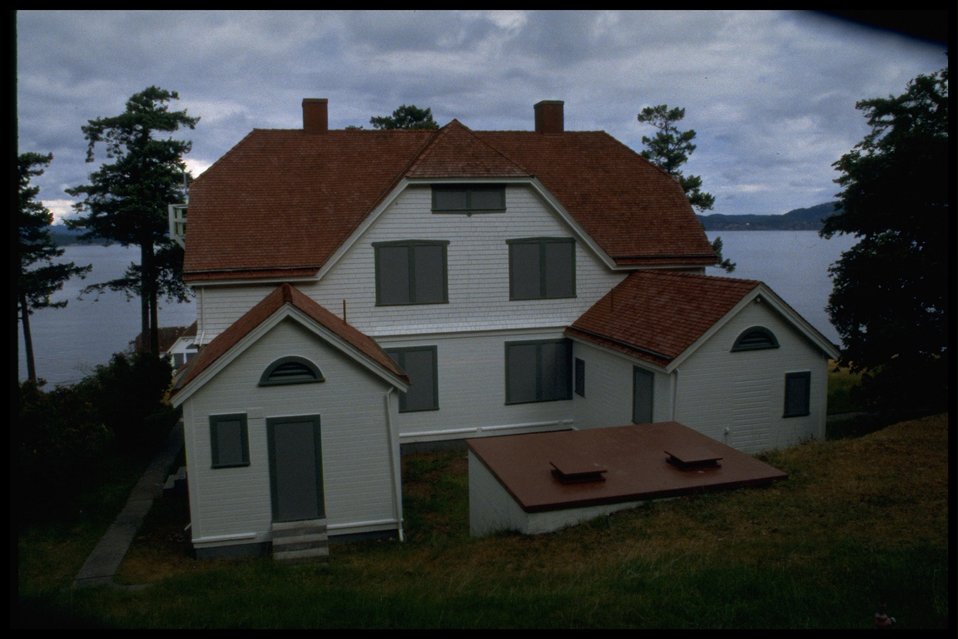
Living quarters at Turn Point. One in a series of ten shots of the living quarters.